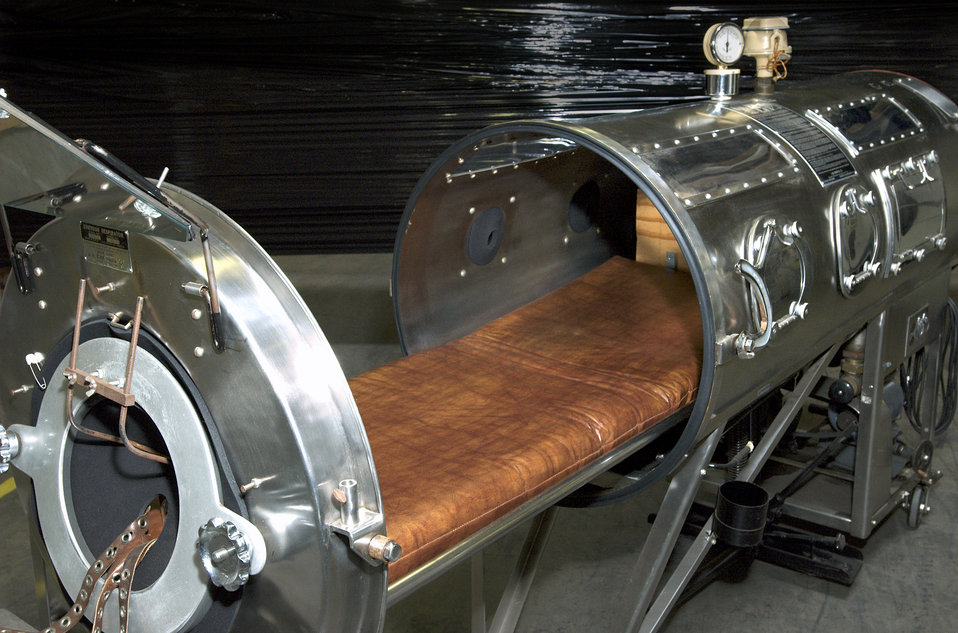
This photograph shows an opened artificial respirator commonly known as the iron lung. Polio patients of the 1950s depended on these devices to breath after being paralyzed with this devastating virus.